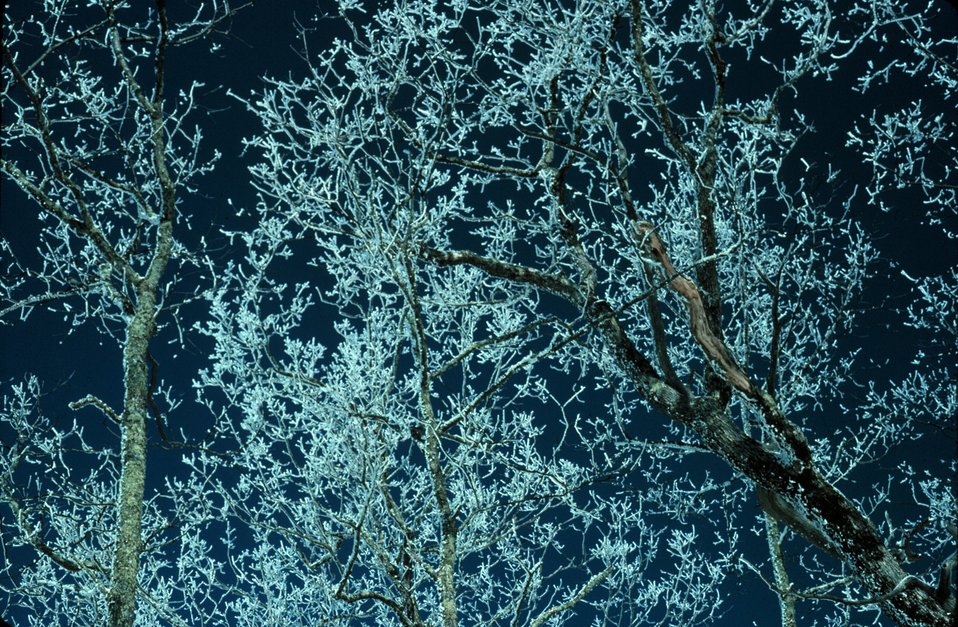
Rime ice in the Smokies